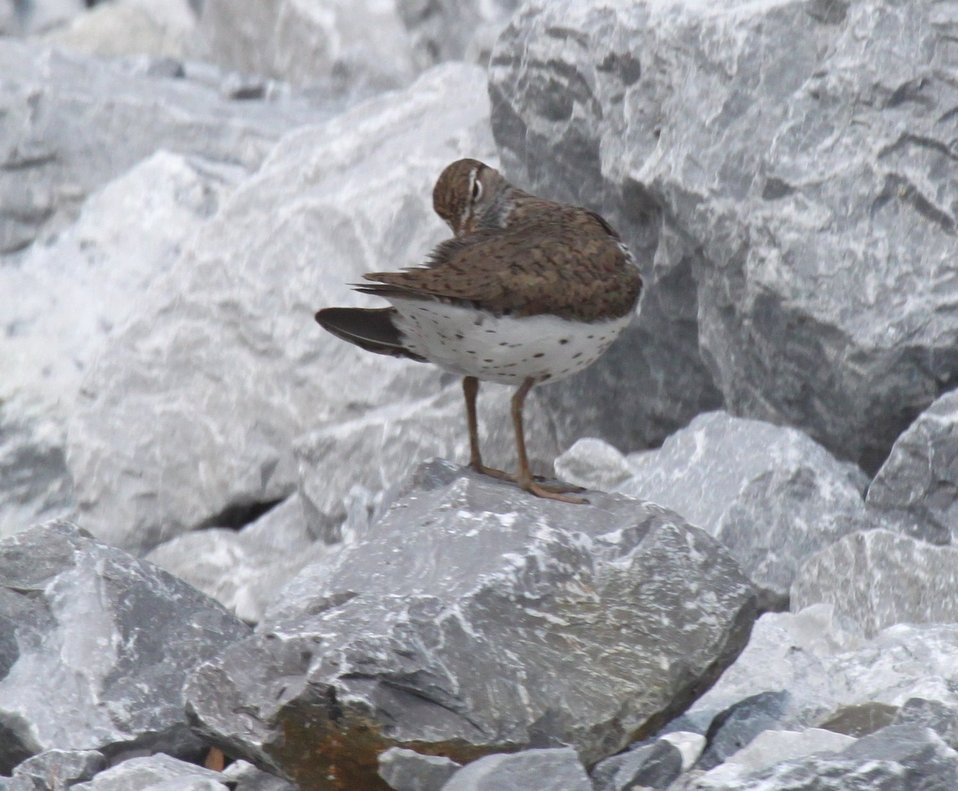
Spotted sandpiper at Missisquoi National Wildlife Refuge.